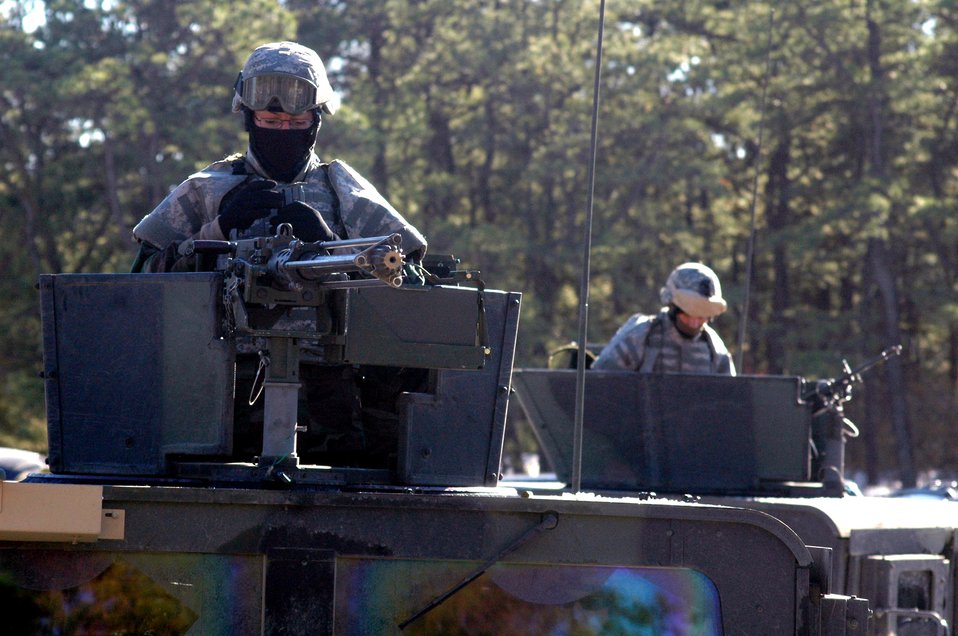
Air Force tactical security element training

Security forces students in the tactical security element training course prepare for a mounted patrol (convoy) scenario during training on a range on Fort Dix, N.J. The course, held in early December, was the first of its kind by the U.S. Air Force Expeditionary Center at Fort Dix. Taught by instructors from the Air Force Office of Special Investigations and a security forces cadre from the center's 421st Combat Training Squadron, the training is designed to prepare security forces for